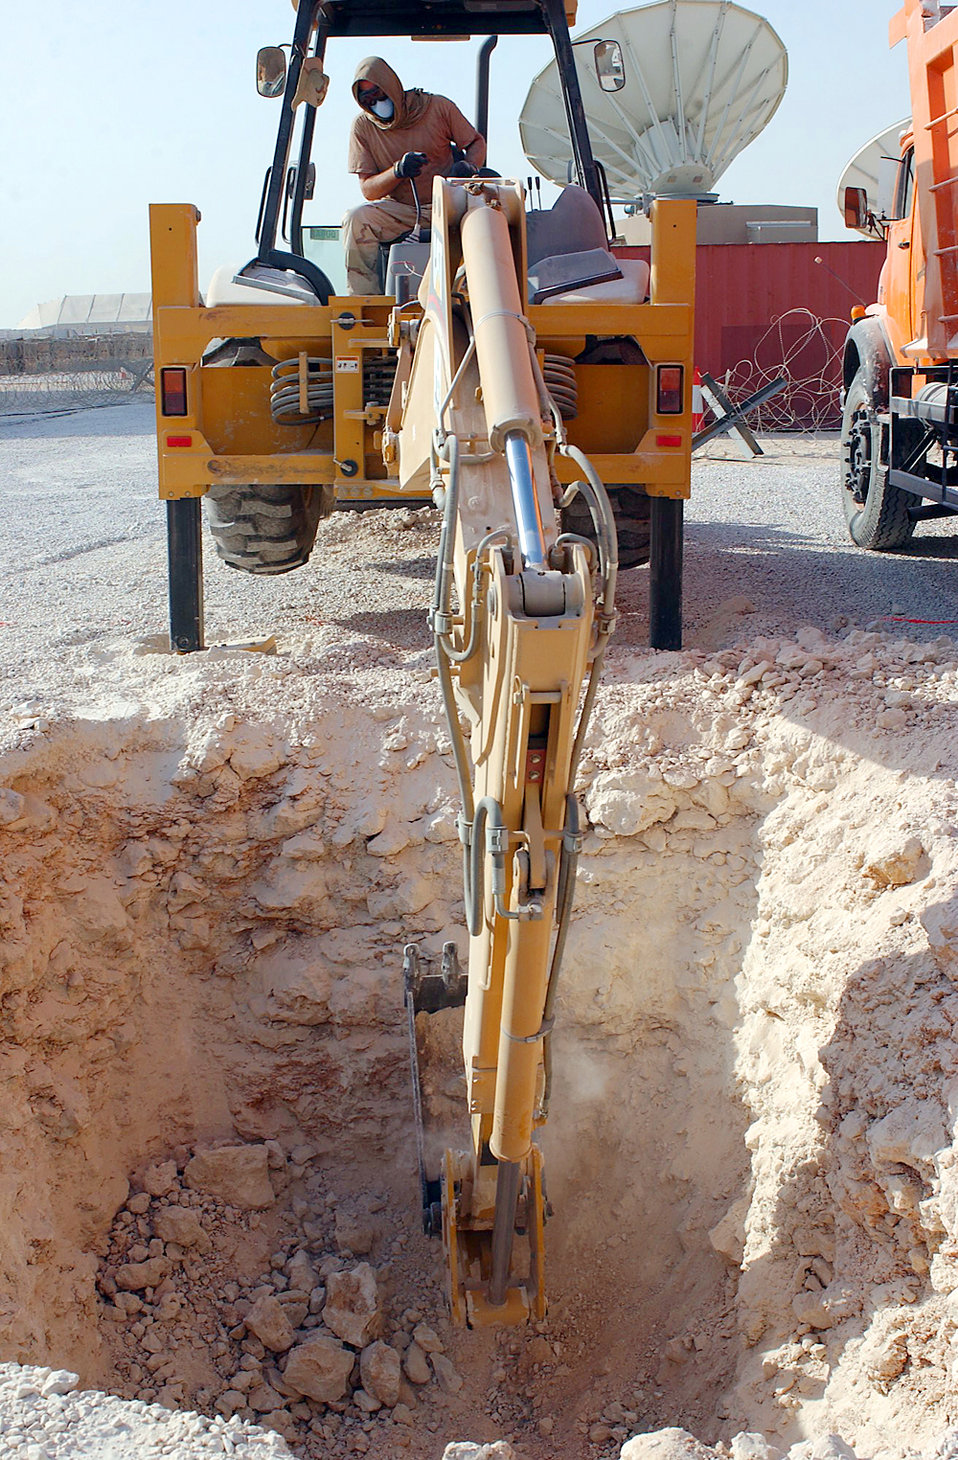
Dig that

AL UDEID AIR BASE, Qatar -- Tech. Sgt. Carl Castell digs a manhole that will house cables for the 379th Expeditionary Communications Squadron.